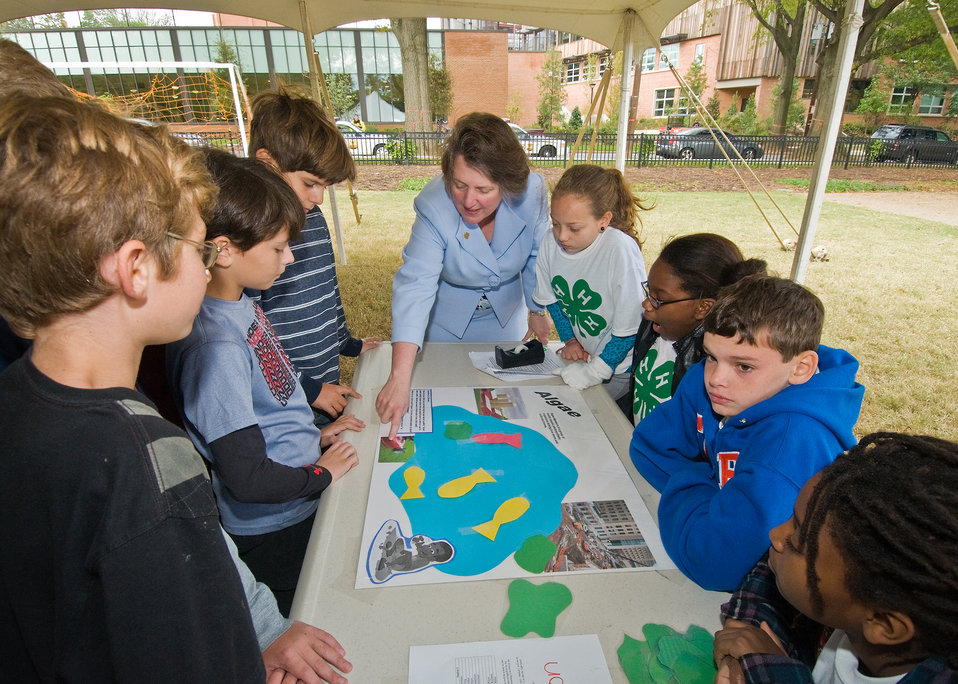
Deputy Secretary Kathleen Merrigan and fifth grade student from Hearst Elementary School in Washington, DC, discuss the effect of algae on water. The experiment was part of the 4-H National Youth Science Day, National Science Experiment, 4-H2O, Tuesday, October 6, 2010. Students learned about the importance of water quality and its impact on the environment with experiments to discover how to reduce their carbon footprint. USDA Photo 10di1518-14 by Bob Nichols.